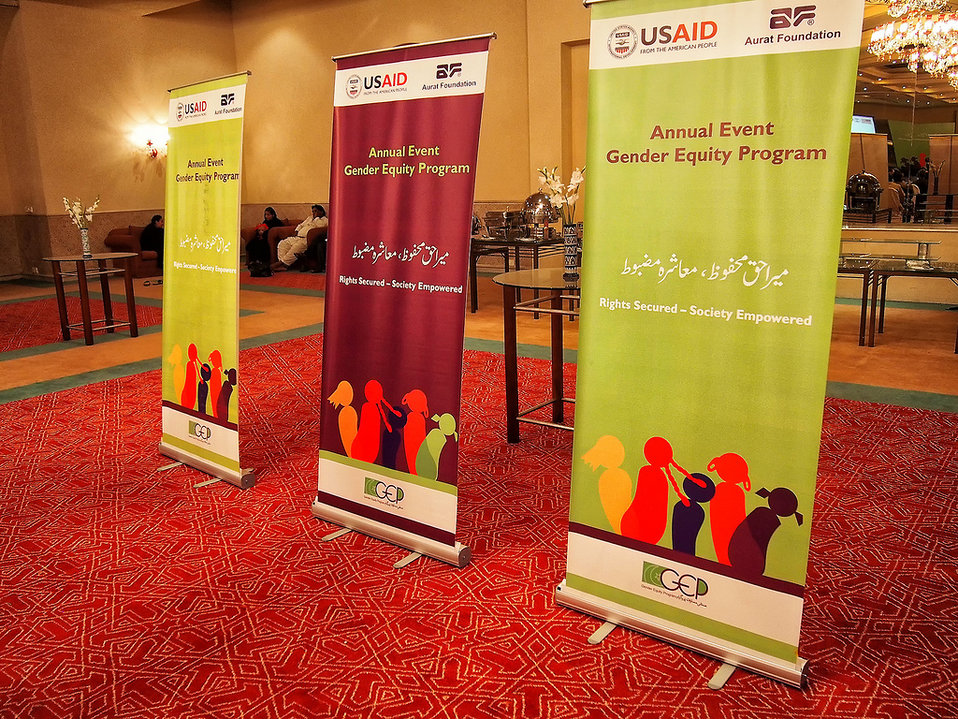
9877866446 3Gender Equity Program, Pakistan68c1e8bfd b

USAID and Aurat Foundation annual event in Islamabad, Sept. 20, 2013